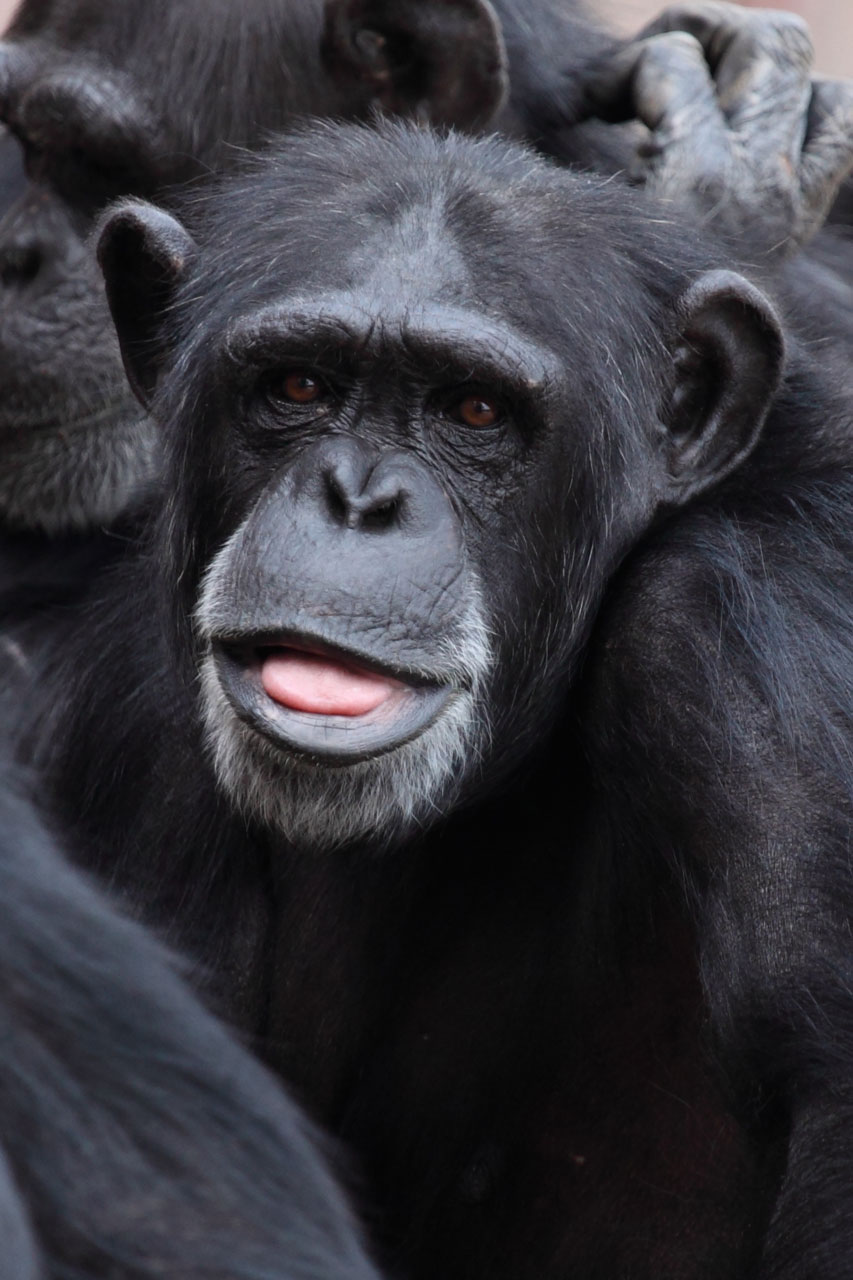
Funny face making

Chimpanzee making a funny face.